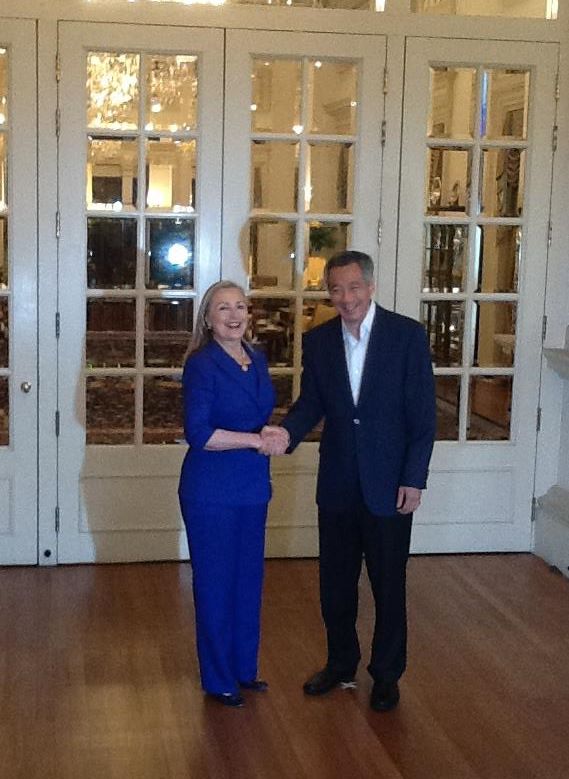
Secretary Clinton Meets With Singaporean Prime Minister Lee Hsien Loong

U.S. Secretary of State Hillary Rodham Clinton meets with Singaporean Prime Minister Lee Hsien Loong at Istana in Singapore, November 17, 2012.